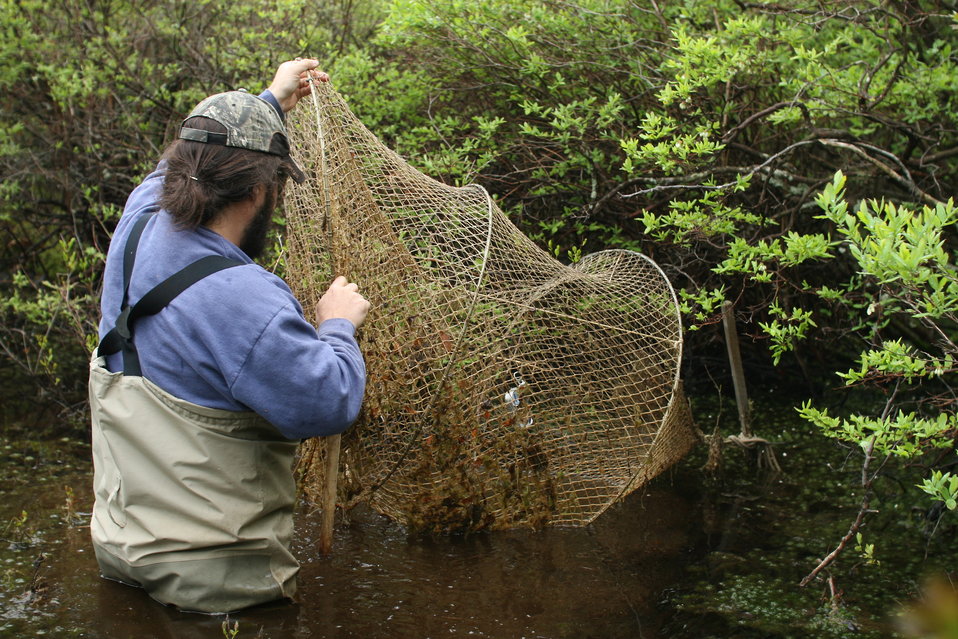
Blanding's turtle at New Boston Air Force Base